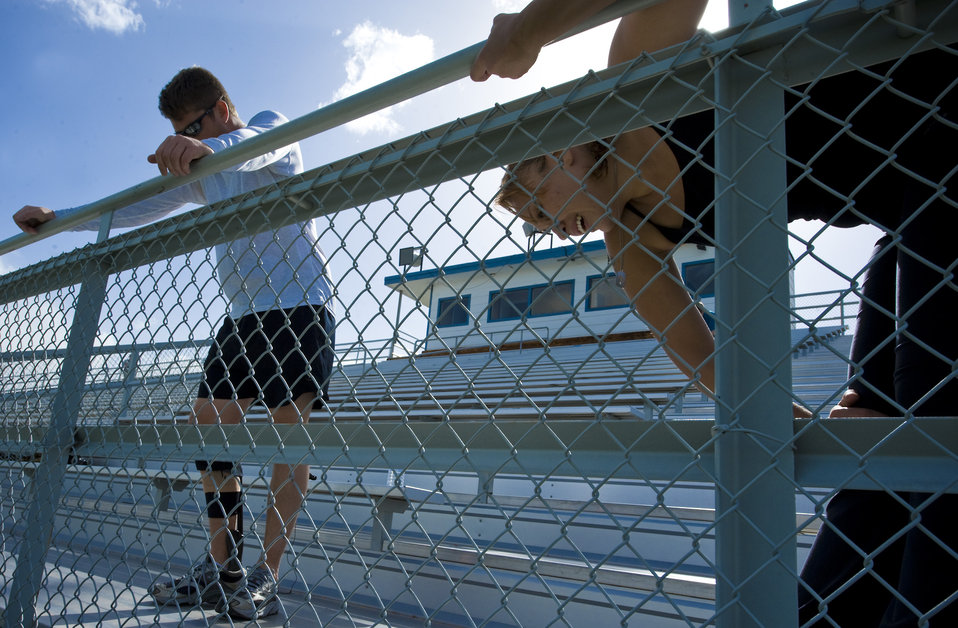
Warrior Games

The Air Force team run bleachers during their first training session leading up to the Warrior Games, May 9, 2011, at the Air Force Academy. The Warrior Games help elevate abilities through athletic competition for wounded, ill, and injured service members by providing a focal event to empower the incorporation of athletics into military wounded warrior programs, the games run through May 16 – May 21.